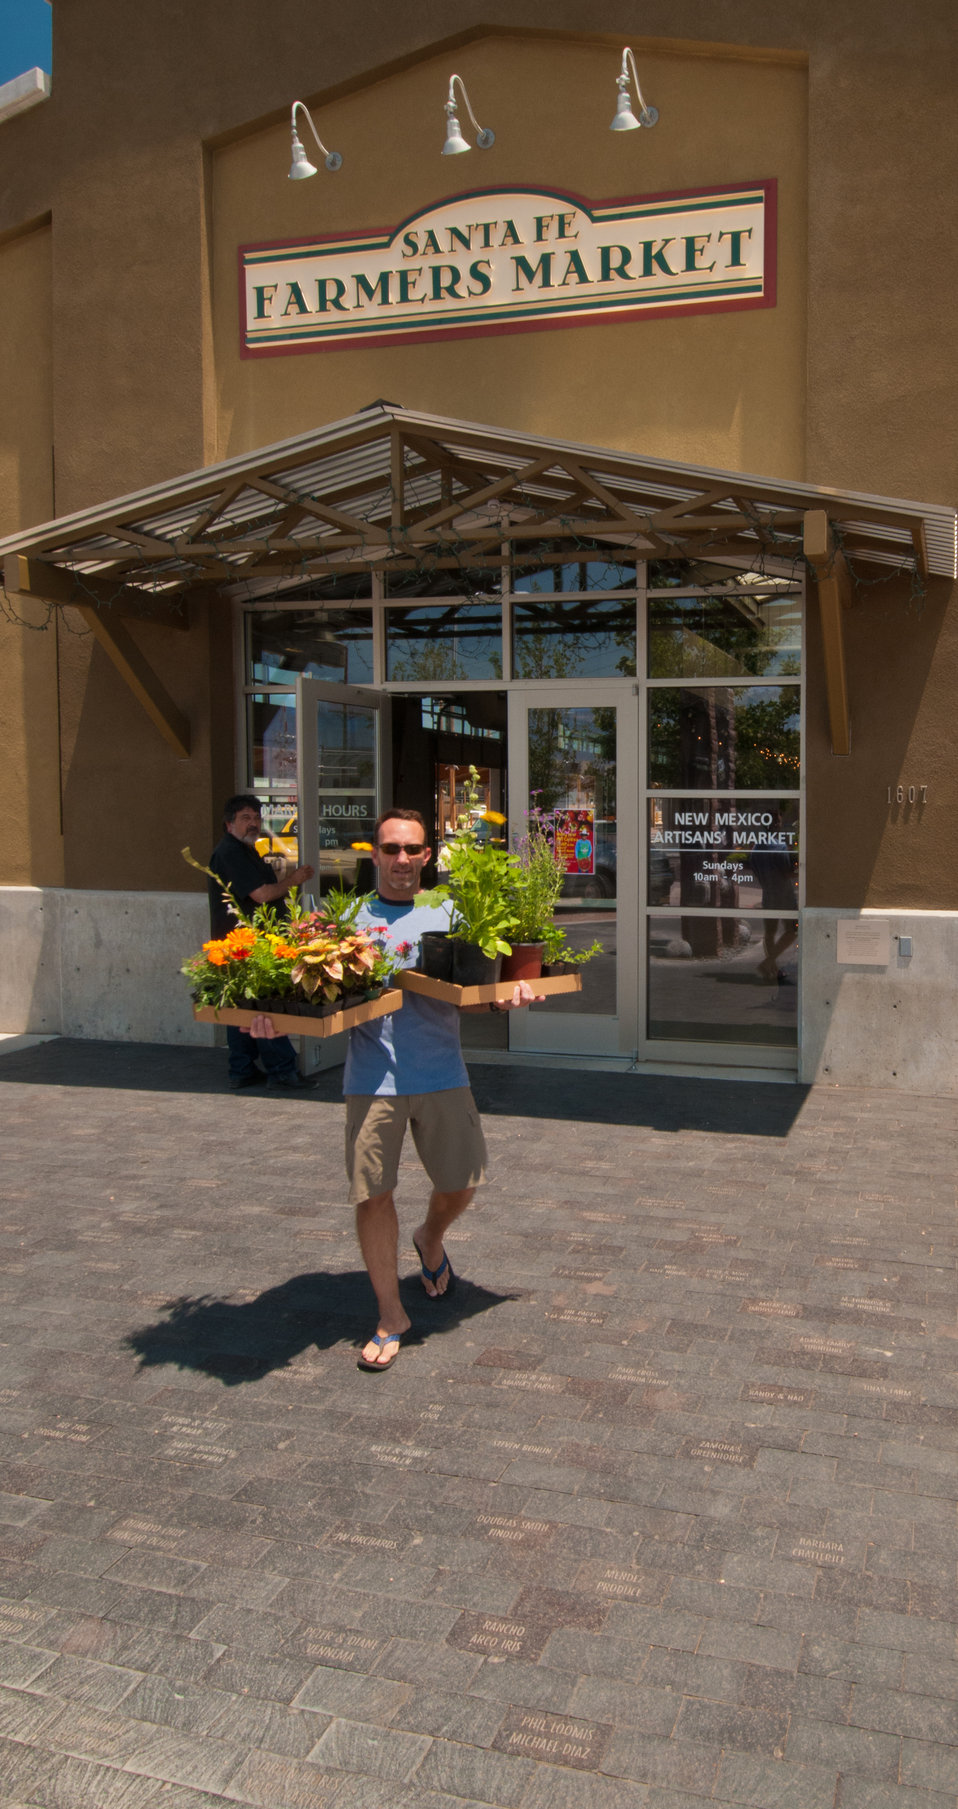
The Santa Fe Farmers Market is one of the oldest, largest and most successful growers’ markets in the country. Serving more than 150 farmers and producers in 15 Northern New Mexico counties, the market brings fresh food; education promotes small farms and sustainable agriculture in Northern New Mexico. The Market began with a handful of farmers in the late 1960’s and represents over 100 active vendors and features hundreds of different agricultural products. The Santa Fe Farmers Market assures 100% percent of the vegetables, fruits, and nursery plants available at the market are locally grown by the people selling them.